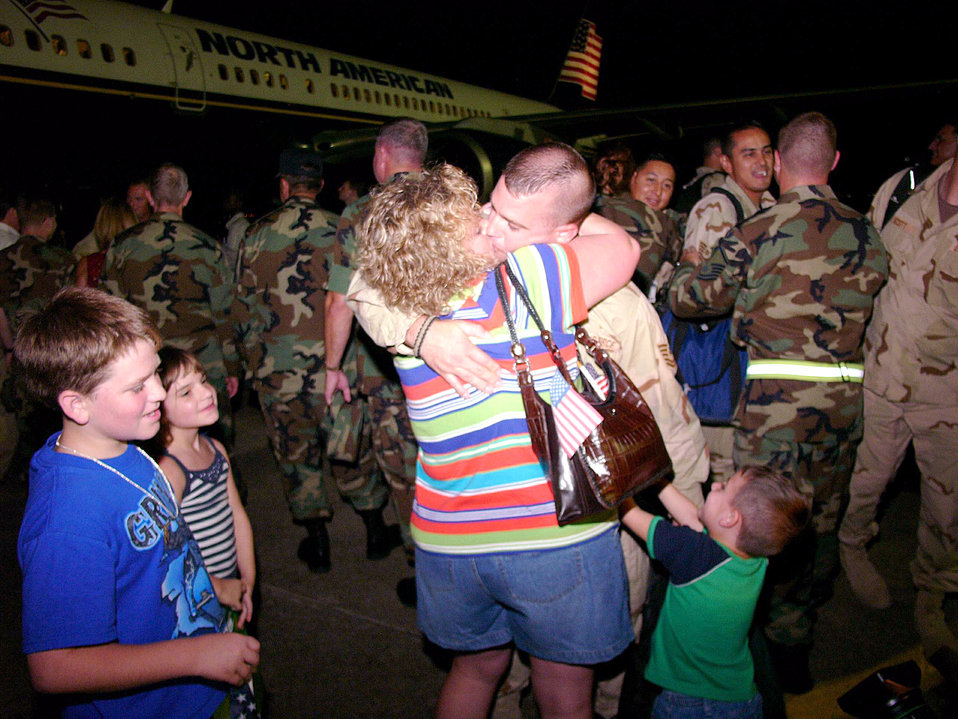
It's good to be home

ELLINGTON FIELD, Texas -- Tech. Sgt. W.T. Roy is greeted by his wife, Misti, and children (from left) Talor, 12, Mallori, 7, and Branson, 3. Sergeant Roy was deployed with the 147th Fighter Wing to Balad Air Base, Iraq. Many of the Airmen's families were there to meet them despite being evacuated for Hurricane Rita.